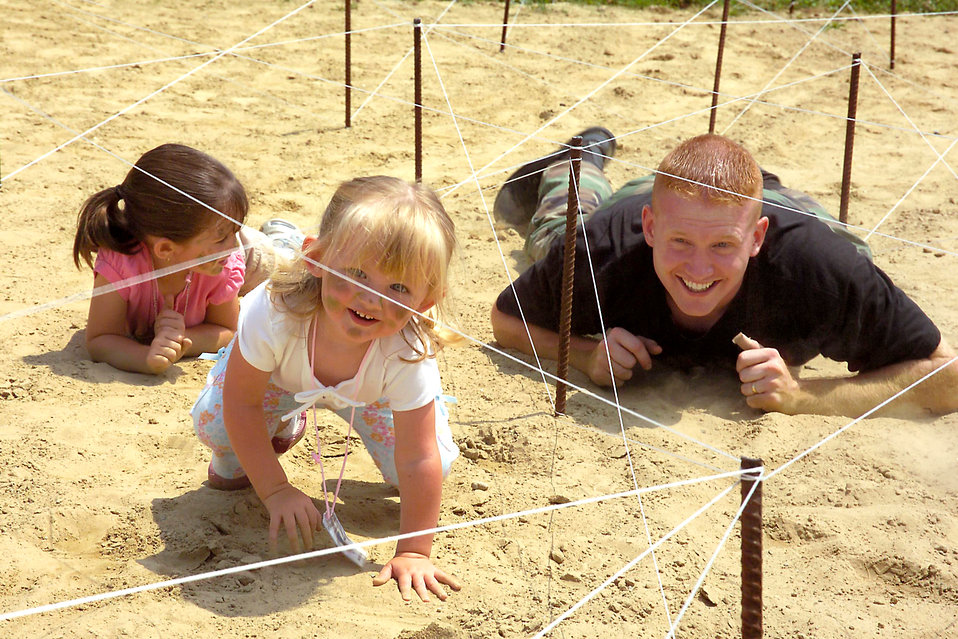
Warrior children

HANSCOM AIR FORCE BASE, Mass. -- Staff Sgt. Lee Feldhausen and his daughters, Kayey, 4, and Breanna, 1, inch their way through a low-crawl obstacle here during Hanscom Warrior, Junior Warrior Day. The July 15 event honored children of deployed servicemembers and those recently deployed. More than 125 children participated in the event and 40 families received Homefront Hero Medals.